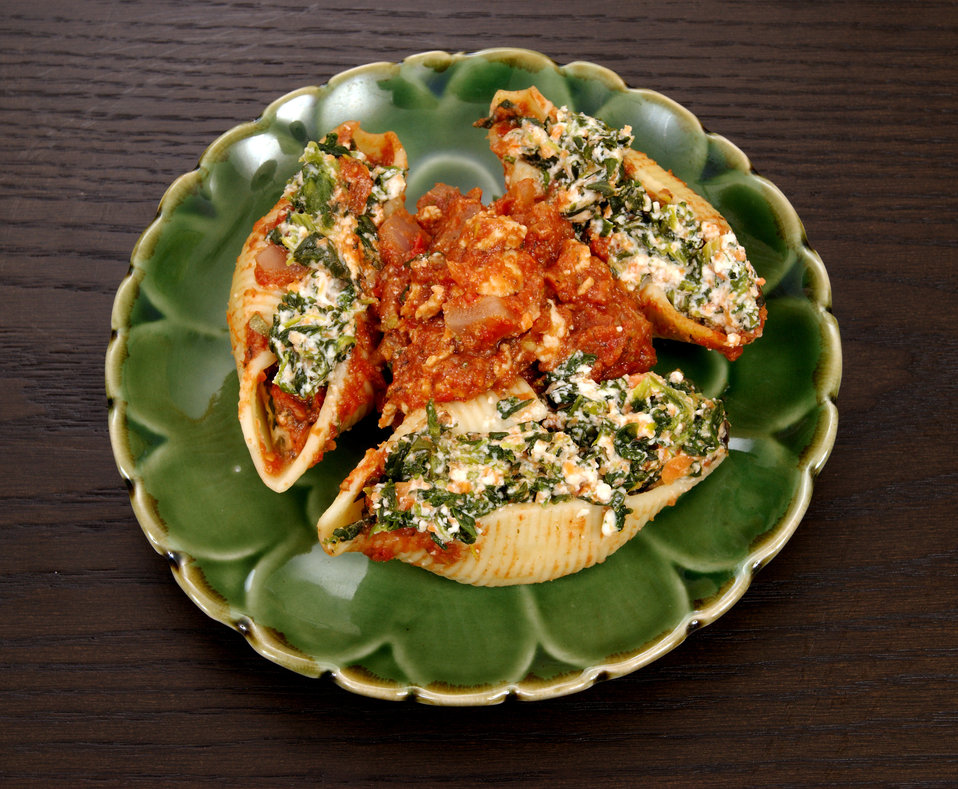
This dish was made using ingredients that are low-calorie, low-sodium, and low in saturated fats. Coupled with daily exercise, healthy food choices like these allow one to maintain a healthy body weight and blood pressure, thereby, reducing the problems brought on due to obesity such as diabetes and hypertension.